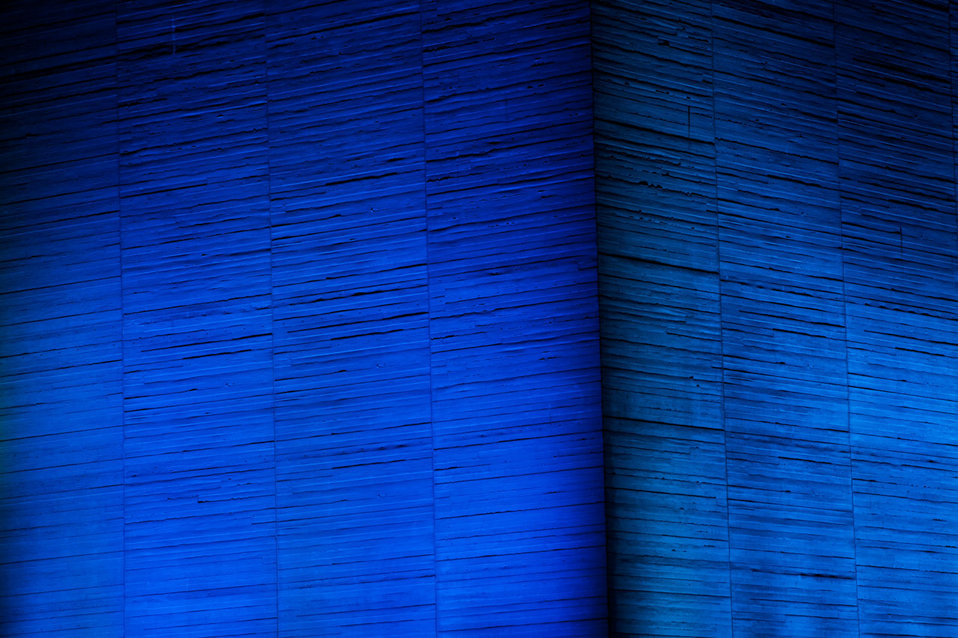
Abstract blue pattern. walls of national theatre in london at night.